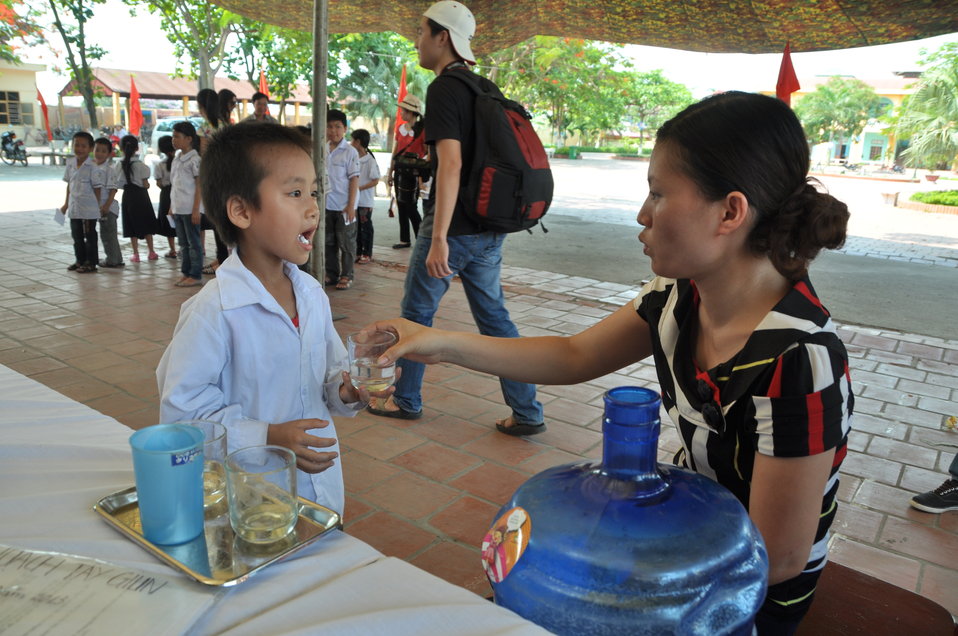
USAID supports deworming education and medication distribution in Bac Giang Province

May 20, 2013